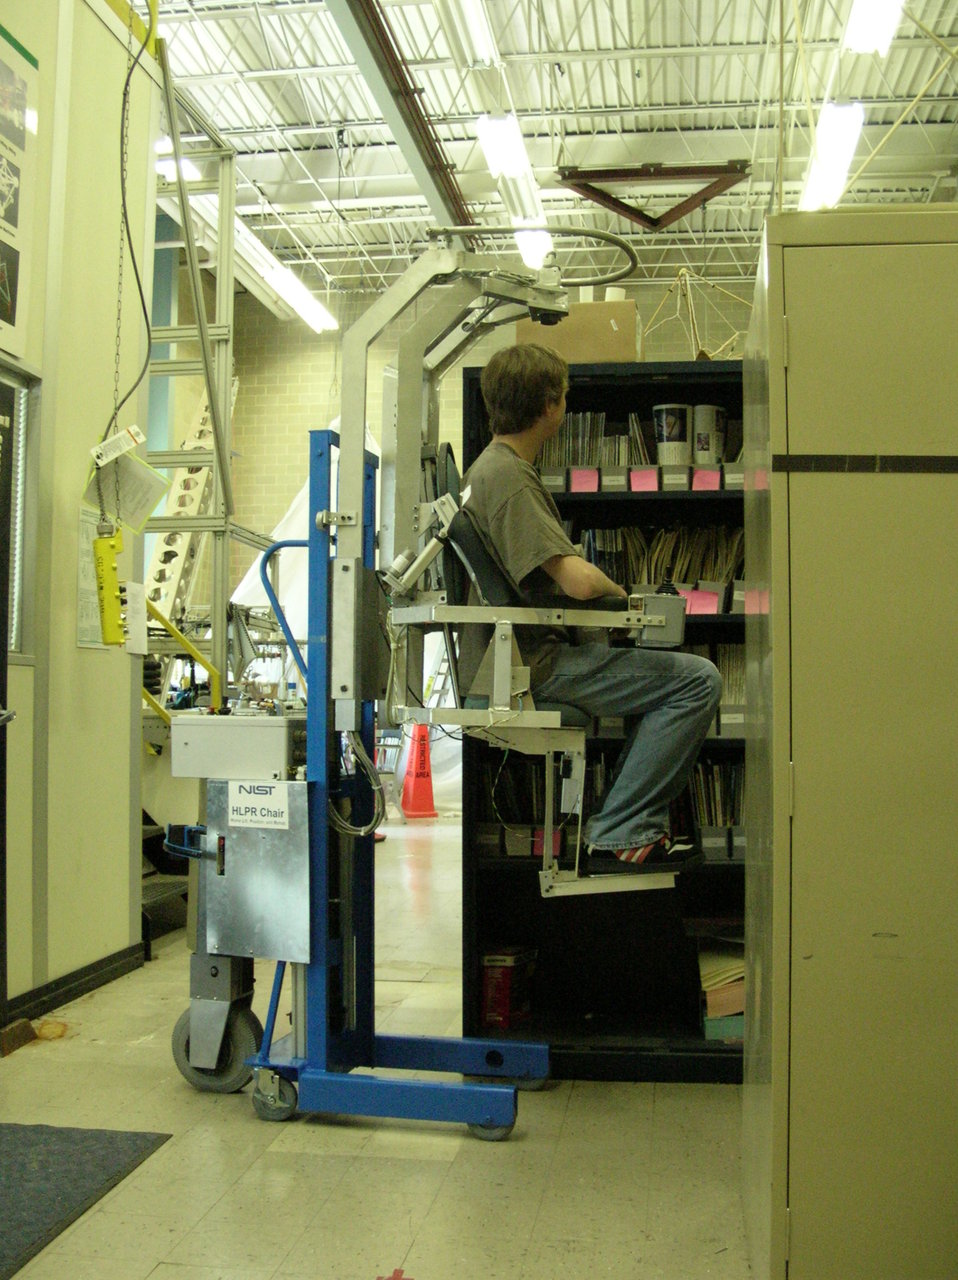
Robot Wheelchair May Give Patients More Independence

NIST research assistant demonstrates one function of the prototype robotic HLPR chair, lifting the patient to reach high shelves.